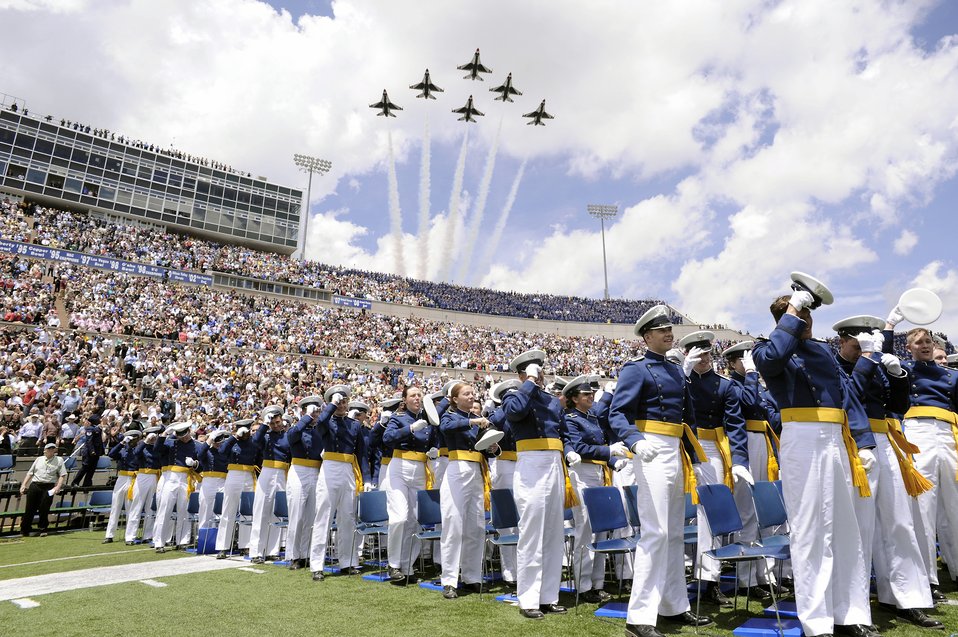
Joint Chiefs chairman delivers Academy commencement

The Thunderbirds fly over as 1001 U.S. Air Force Academy cadets are commissioned second lieutenants at the close of the class of 2010 graduation ceremony May 26, 2010, at the U.S. Air Force Academy, Colo.